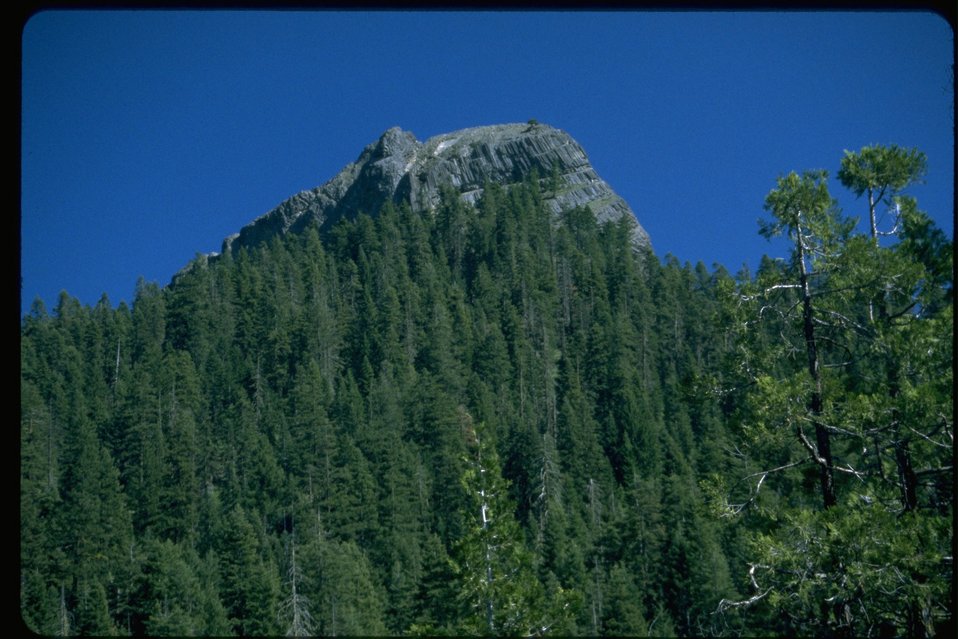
Pilot Rock Cascade-Siskiyou National Monument (SCNM).